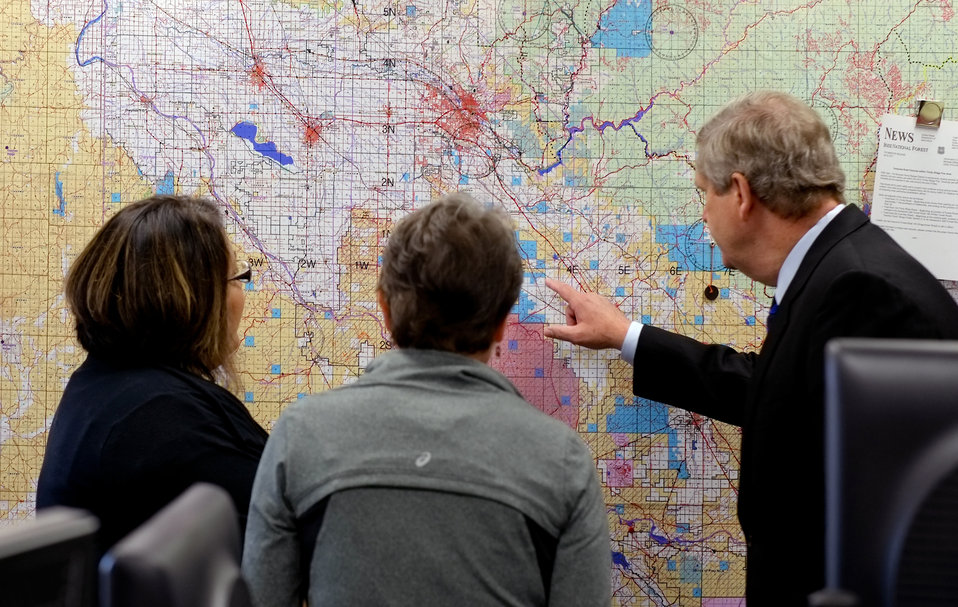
Interior Secretary Sally Jewell and Agriculture Secretary Tom Vilsack look at a national map of potential fire areas at the National Interagency Fire Center (NIFC) in Boise, ID on Monday, May 13, 2013. Agriculture Secretary Vilsack and Interior Secretary Jewell provided an outlook for the upcoming fire season and outlined the federal government’s efforts to ensure collaboration in protecting Americans from wildfire.